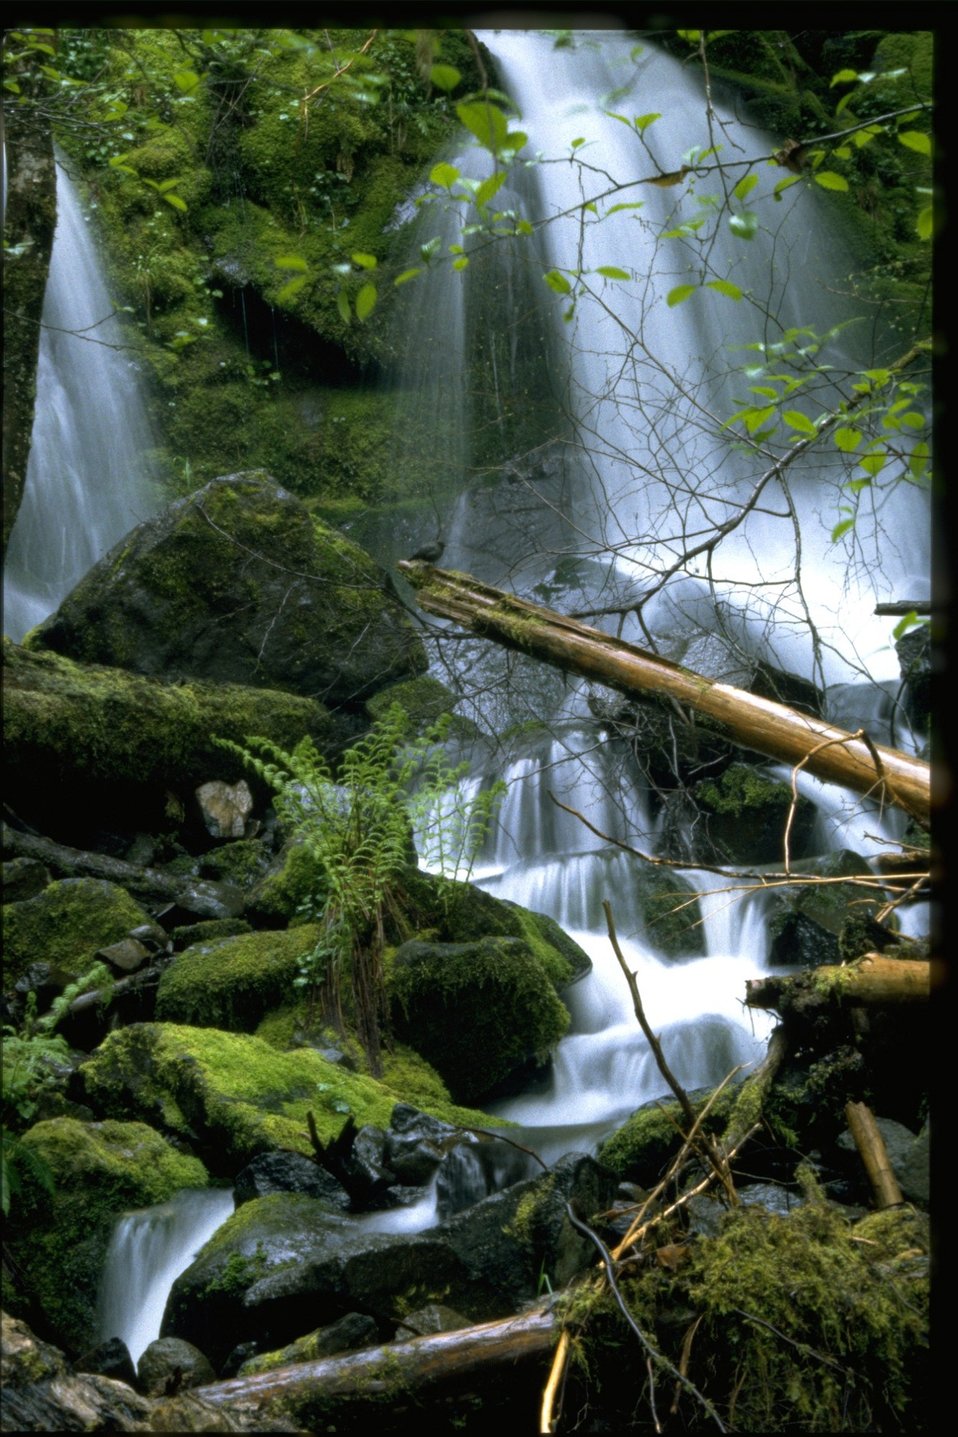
Swiftwater stream.